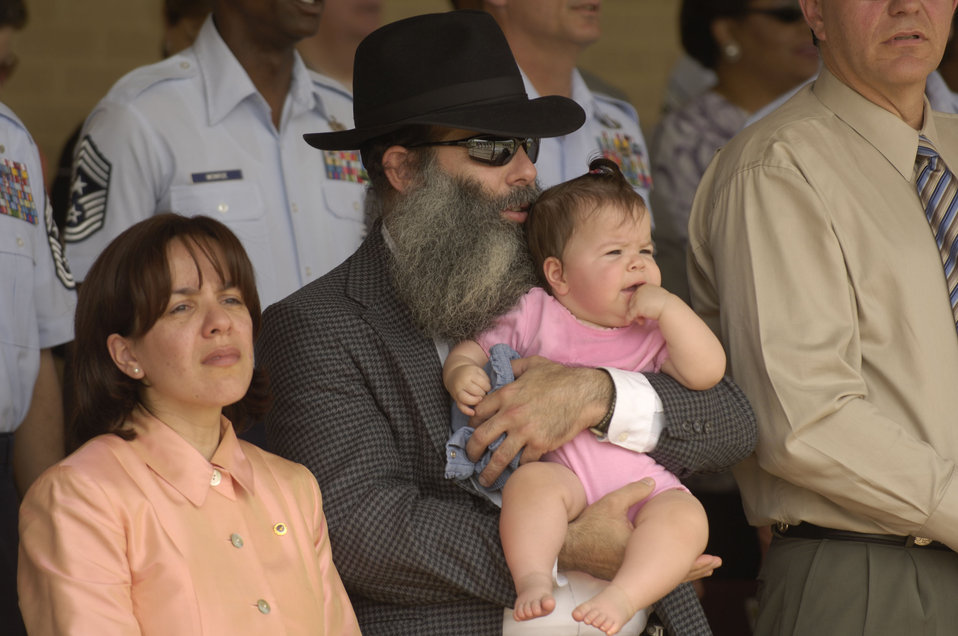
Lackland honors nine enlisted heroes

David, Alison and Miriam Jacobsen witness a Basic Military Training Memorialization Ceremony at Lackland Air Force Base, Texas, on Wednesday, June 14, that memorialized Airman 1st Class Elizabeth Jacobsen and eight other enlisted heroes. Several hundred people witnessed the ceremony that dedicated nine training facilities in honor of nine enlisted heroes who have served from World War II to present-day operations in the war on terrorism. The ceremony was part of a three-day event to honor the 60th anniversary of basic military training.